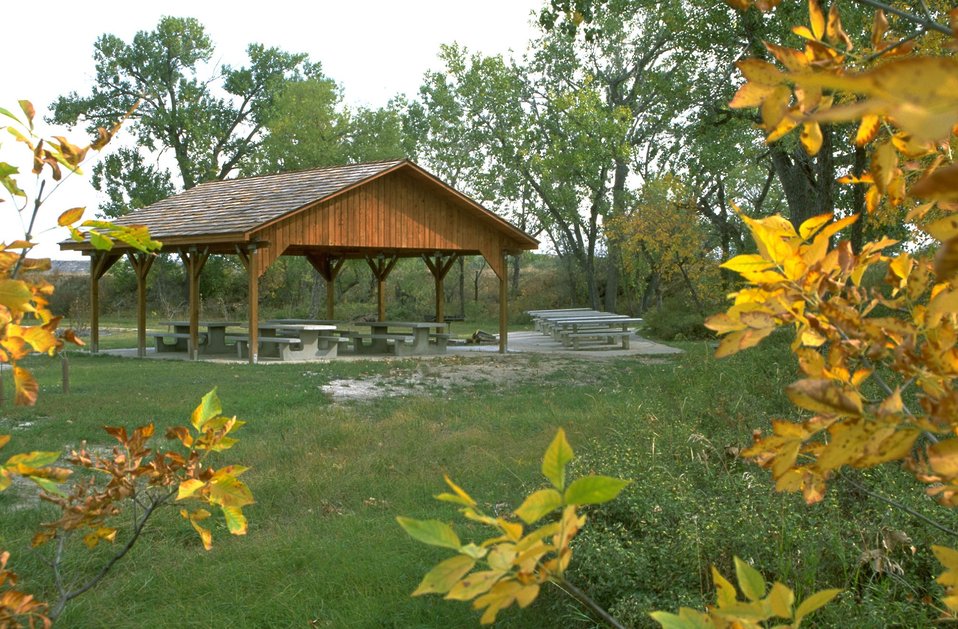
Group Picnic Shelter framed with autumn leaves